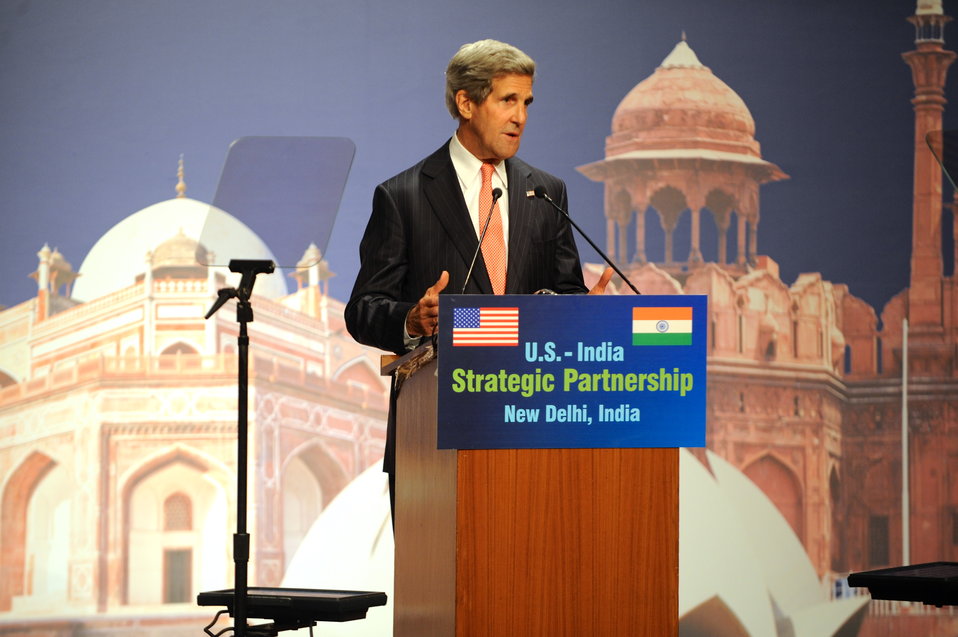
Secretary Kerry Delivers Remarks on U.S.-India Relations

U.S. Secretary of State John Kerry delivers remarks on U.S.-India relations in New Delhi, India on June 23, 2013.